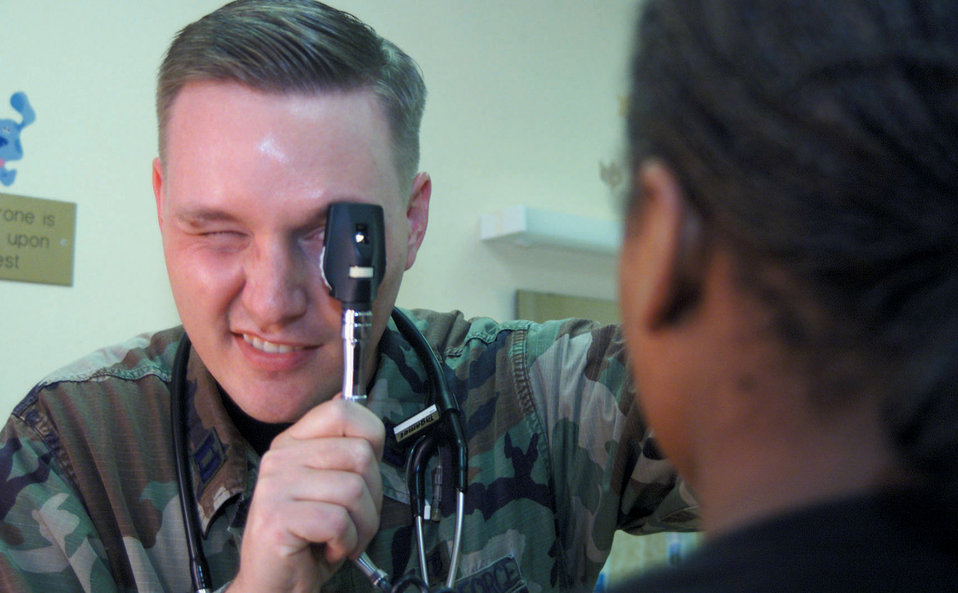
PA Day

SPANGDAHLEM AIR BASE, Germany -- Capt. Randall Stevens uses an ophthalmoscope to examine Airman 1st Class Gabrielle Allen here. The Air Force is just one organization recognizing National Physician Assistant Day on Oct. 6. Both airmen are assigned to the 52nd Medical Group. Stevens is a family practice physician assistant, and Allen is a health services manager apprentice.